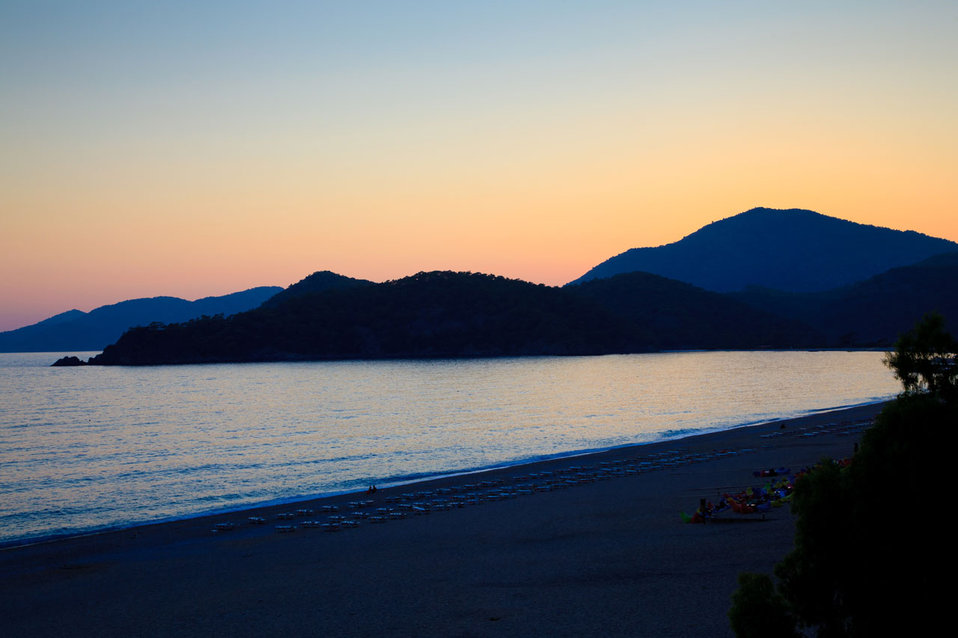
Sunset over mountains with sea and beach in foreground.